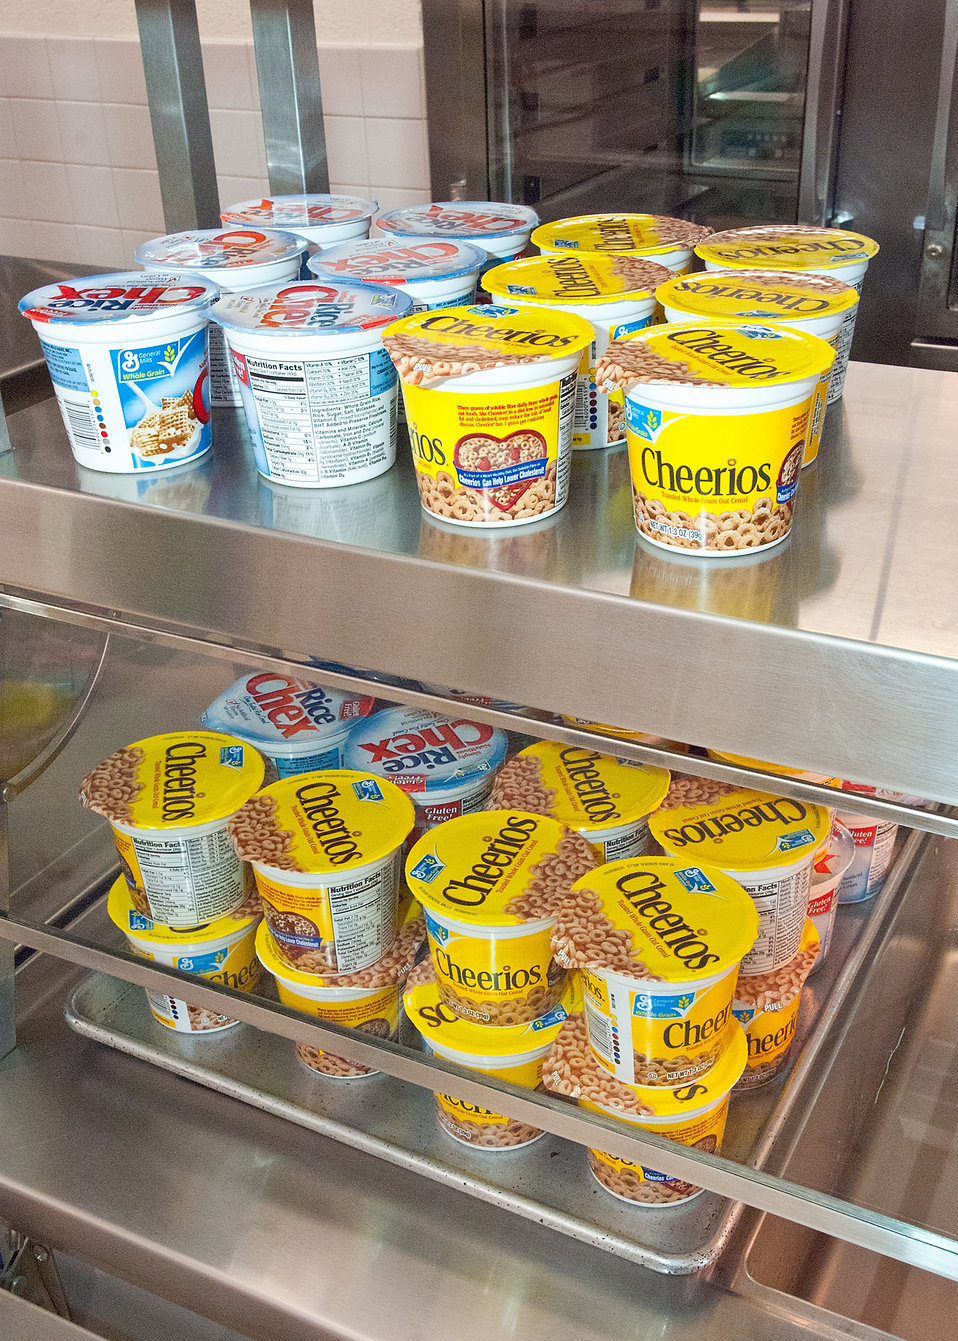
Cereal available for the National School Lunch Program at Washington-Lee High School in Arlington, Virginia, on Wednesday, October 25, 2011. The National School Lunch Program is a federally assisted meal program administered by the United States Department of Agriculture, Food and Nutrition Service operating in public, nonprofit private schools and residential child care institutions. It provides nutritionally balanced, low-cost or free lunches to children each school day.